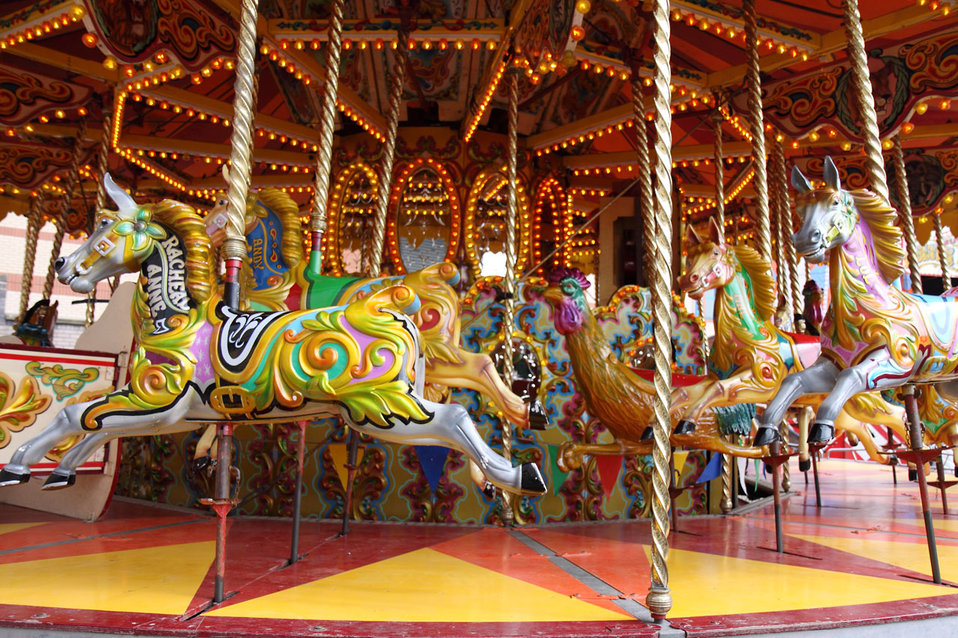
Carousel horses

Colourful carousel horses.